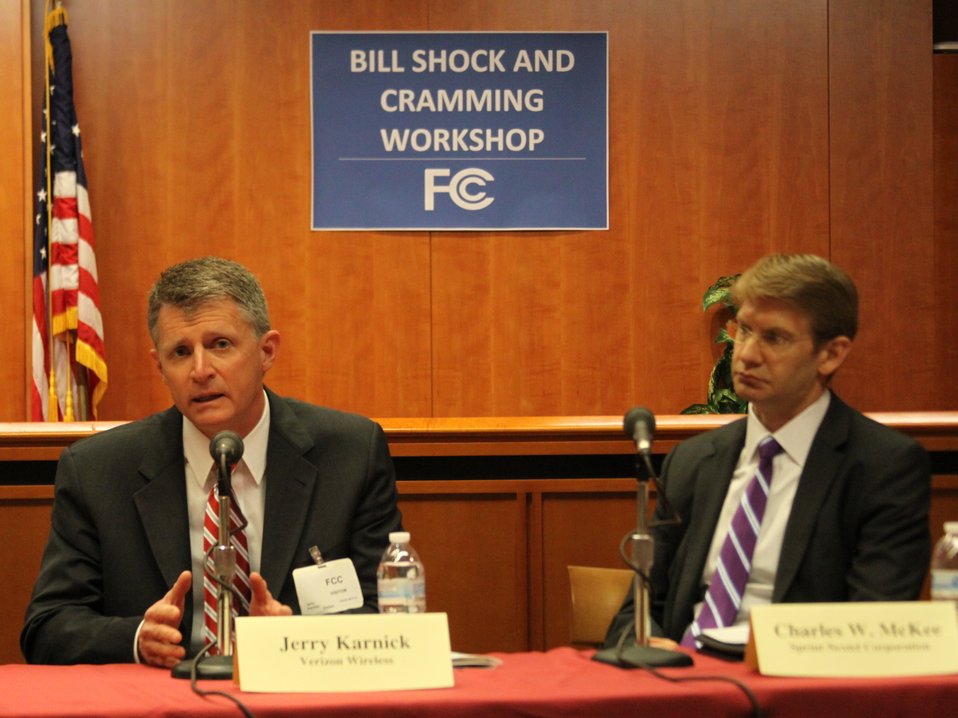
April 17, 2013 Bill Shock and Cramming Workshop